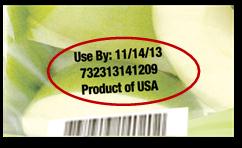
RECALLED – Apple slices

November 14, 2013 – Product Recall – Crunch Pak Issues Voluntary Recall of Limited Quantities of Crunch Pak Brand Apple Slices Because of Possible Health Risk.